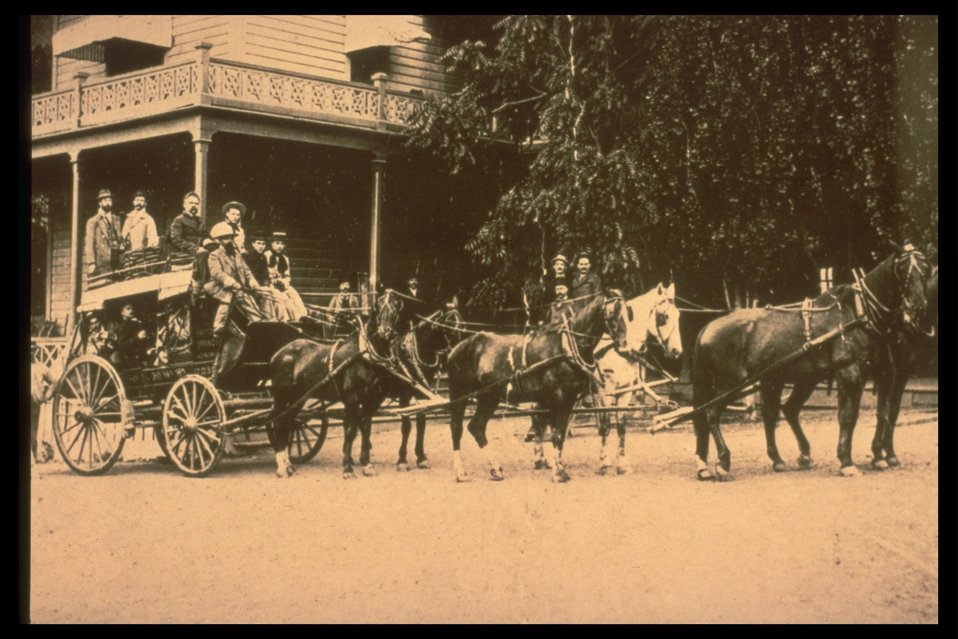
Black and white photo of people posing on a stage coach in town.